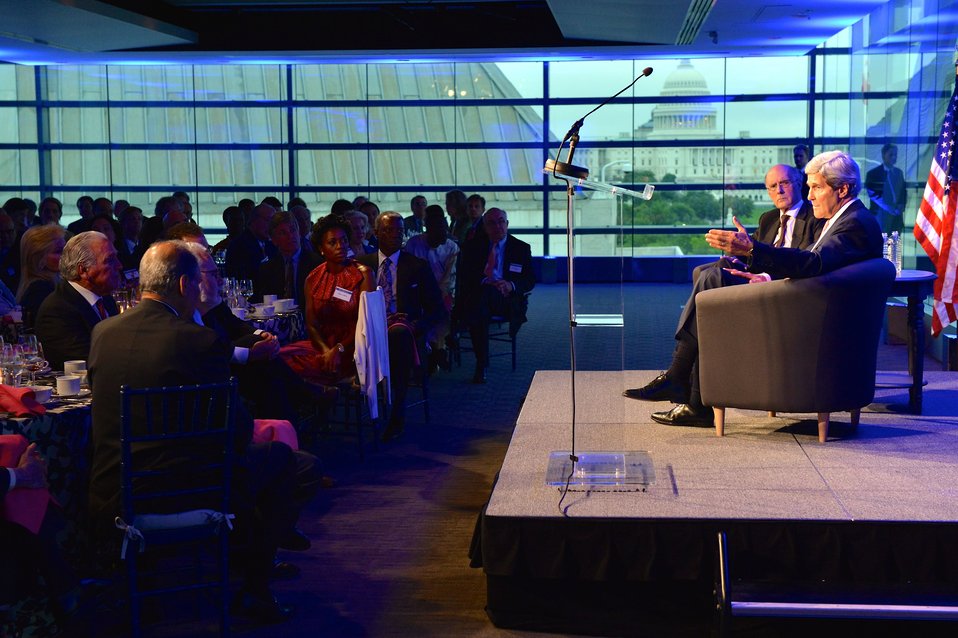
Secretary Kerry Meets With Brookings Board of Trustees and International Advisory Council

U.S. Secretary of State John Kerry meets with the Brookings Board of Trustees and International Advisory Council in Washington, D.C., on May 29, 2014.